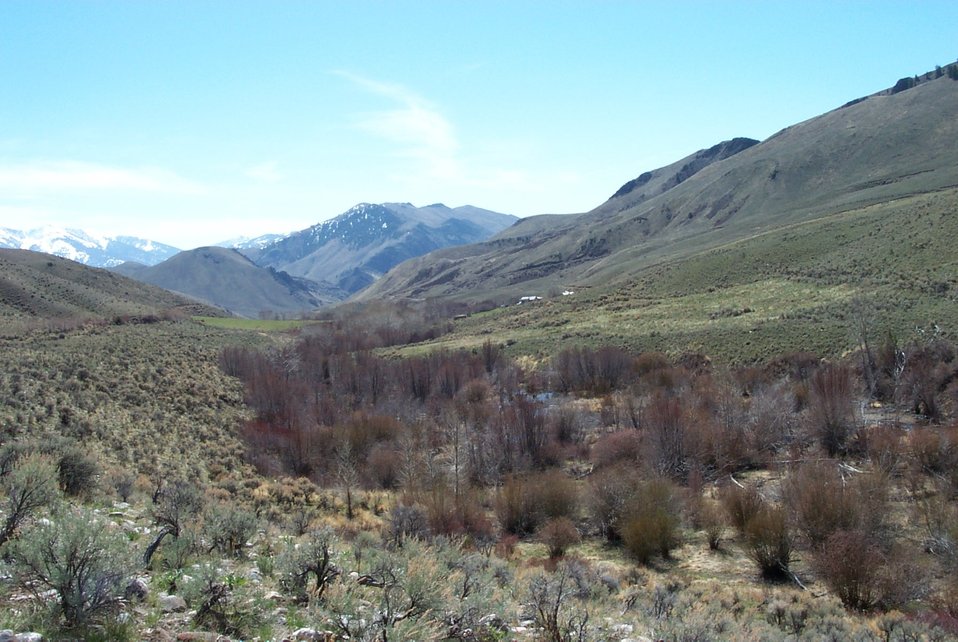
Salmon Field Office Realty Public access Exchange UCSC Upper Columbia Salmon Clearwater District